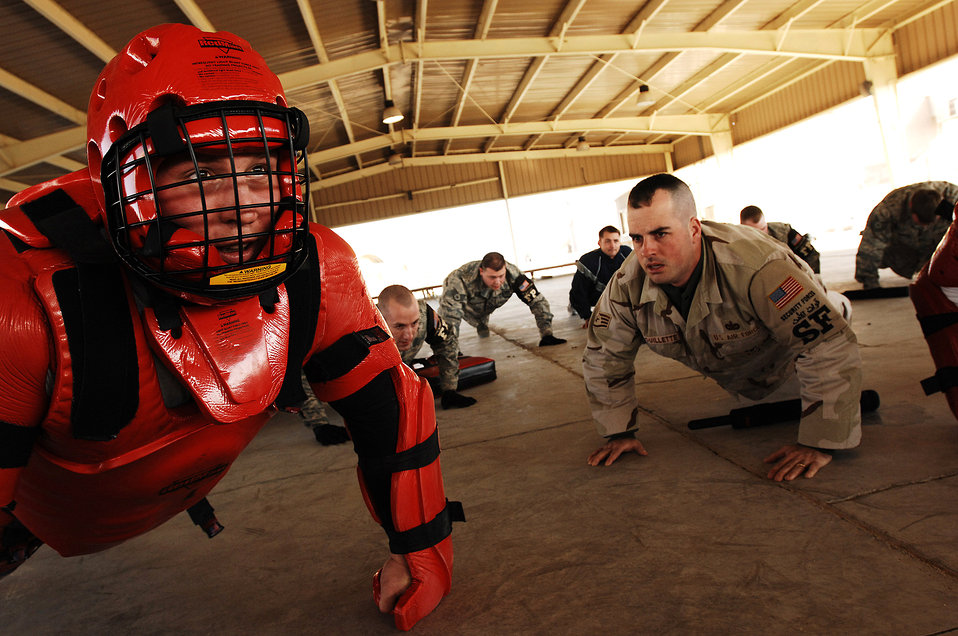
The non-lethal force be with you

Airmen do pushups for a mistake made Jan. 24 during self-defense tactics training at an air base in Southwest Aisa. The self-defense training familiarizes Airmen with how to use non-lethal force to defend themselves. The Airmen are assigned to the 386th Expeditionary Security Forces Squadron and are deployed in support of Operation Iraqi Freedom.